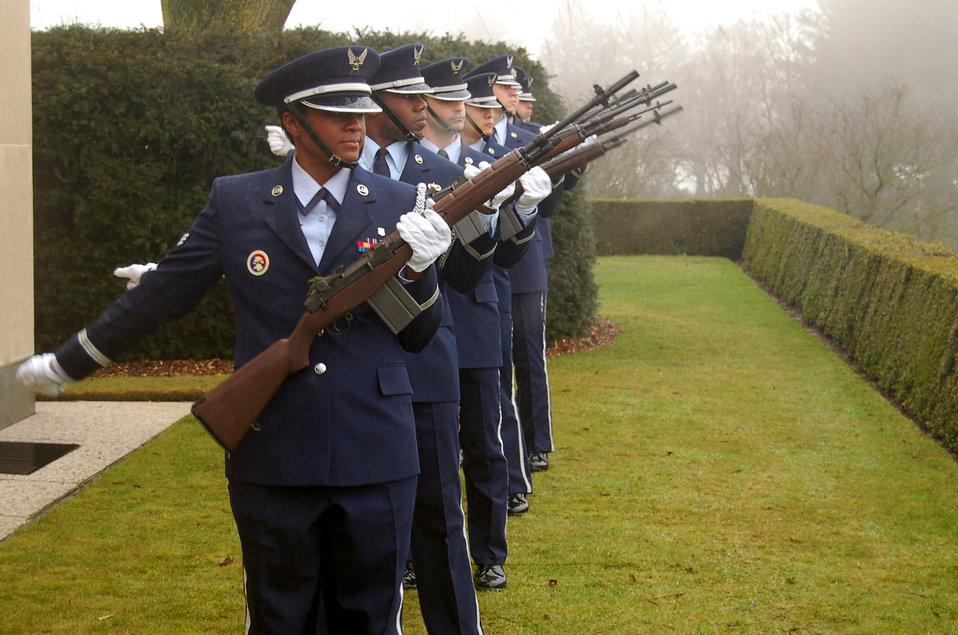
World War II MIAs recovered in Germany

Honor guard members from Spangdahlem Air Base, Germany, give a 21-gun salute during a rosette-placing ceremony Feb. 20 at the Henri-Chapelle Cemetery and Memorial in Belgium. The event honored the nine Airmen of the McMurray Crew in World War II, who flew a B-24 bomber and were missing in action until remains were found in a field southwest of Berlin in 2002.